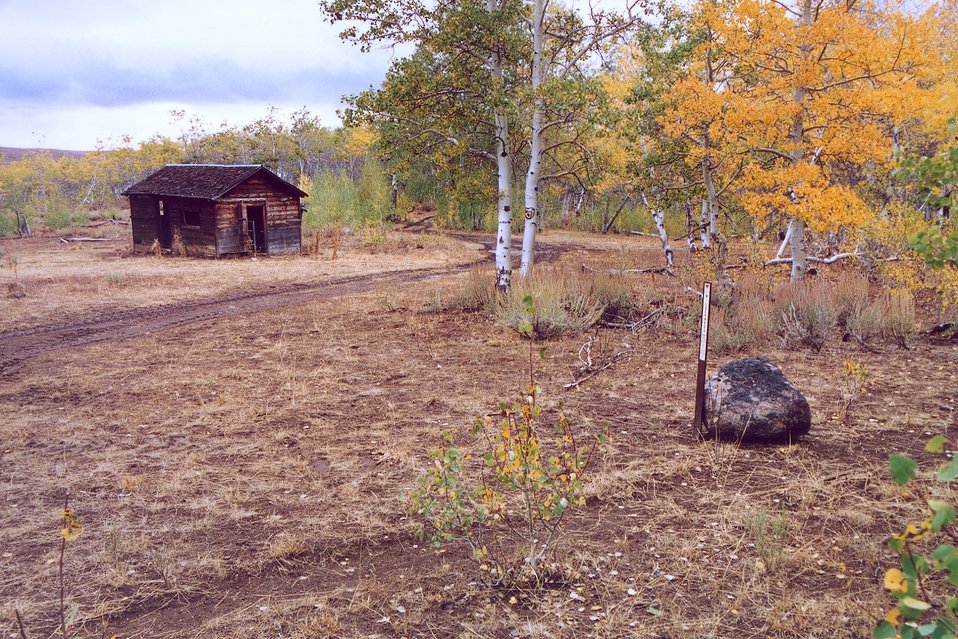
Nye Cabin, Steen's Mountain.